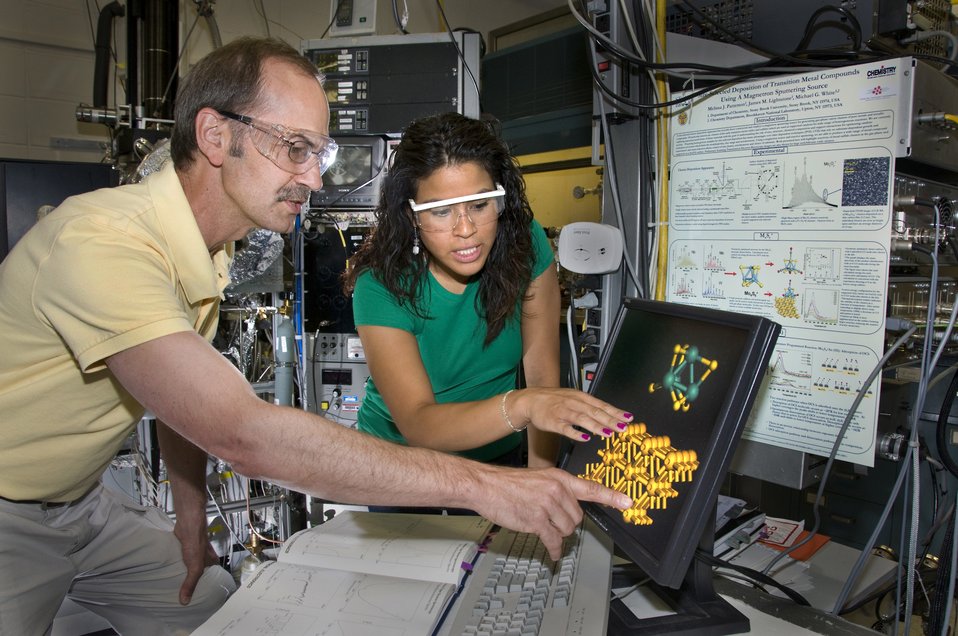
Brookhaven National Laboratory researchers Michael White and Melissa Patterson review and image of a molybdenum sulfide nanocluster.

BNL and Stony Book University have developed a new instrument that allows them to control the size of nanoclusters-groups of 10 to 100 atoms- with atomic precision. They created a model of nanocatalyst of molybdenum sulfide, the first step in developing the next generation of materials to be used in hydrodesulfization, a process that removes sulfur from natural gas and petroleum products to reduce pollution. The new instrument, lets them control how many and what type of atoms are in a nanocluster. It enables them to make nanoclusters with predetermined size, structure and chemical composition, all which are important for the design of new catalysts.